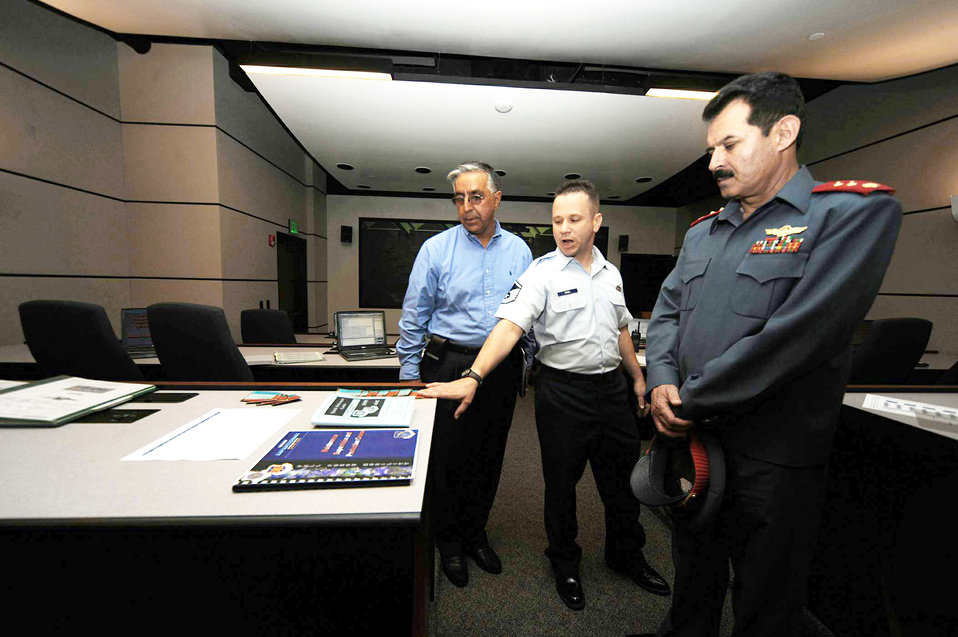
Afghan air corps commander calls Expeditionary Center a 'role model' for training

Master Sgt. Richard Woods explains the maintenance simulator and shows guides and pamphlets to Afghan Maj. Gen. Mohammad Dawran July 13 at the Air Force Expeditionary Center on Joint Base McGuire-Dix-Lakehurst, N.J. General Dawran, commander of the Afghanistan National Army Air Corps, visited the installation to learn more about the Air Education and Training Command's Air Adviser Course housed at the Expeditionary Center on Fort Dix. Sergeant Woods is the director of the Senior Leaders Maintenance Course.